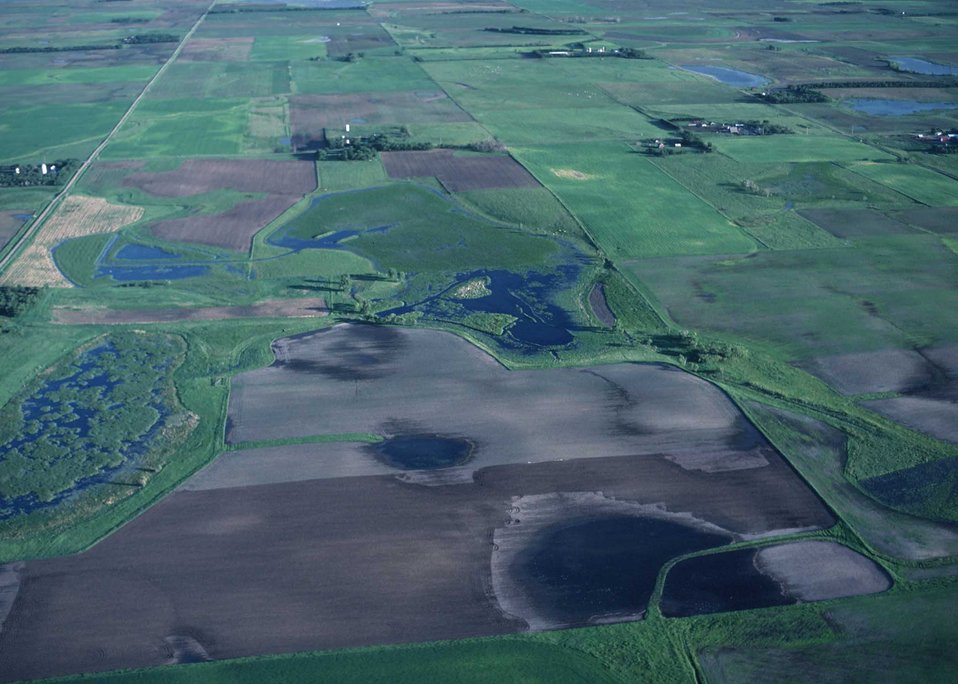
Prarie potholes provide an abundance of vital habitat for wildlife.